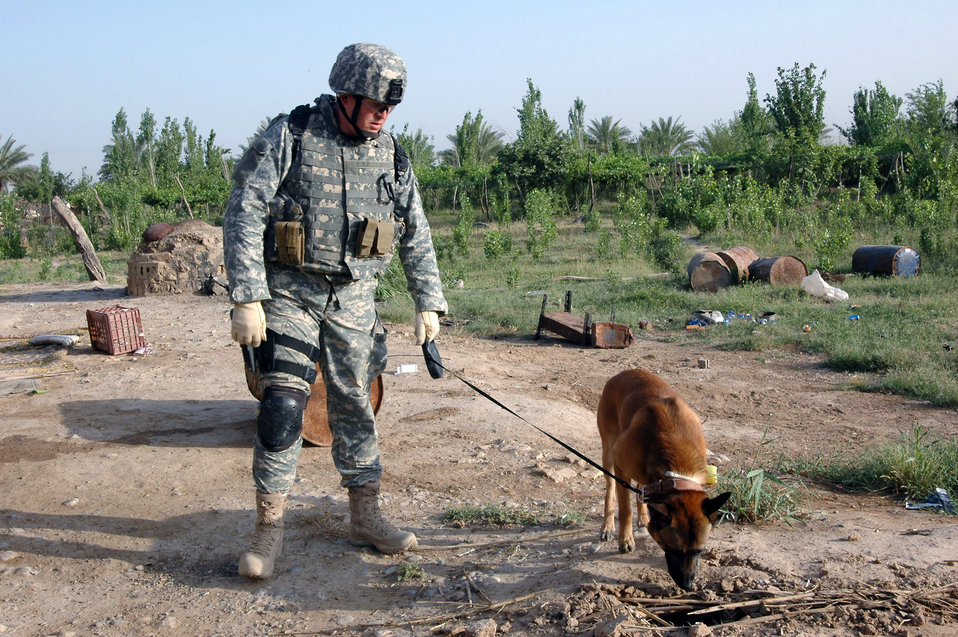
Military working dogs bring bite to the fight

Staff Sgt. Dennis Browning, a military working dog handler, and King, an explosives and patrol attack dog, search an area during a clearing operation near Khan Bani Sa'ad, about 15 miles south of Baqouba, Iraq. Sergeant Browning is deployed from the 21st Security Forces Squadron at Peterson Air Force Base, Colo.